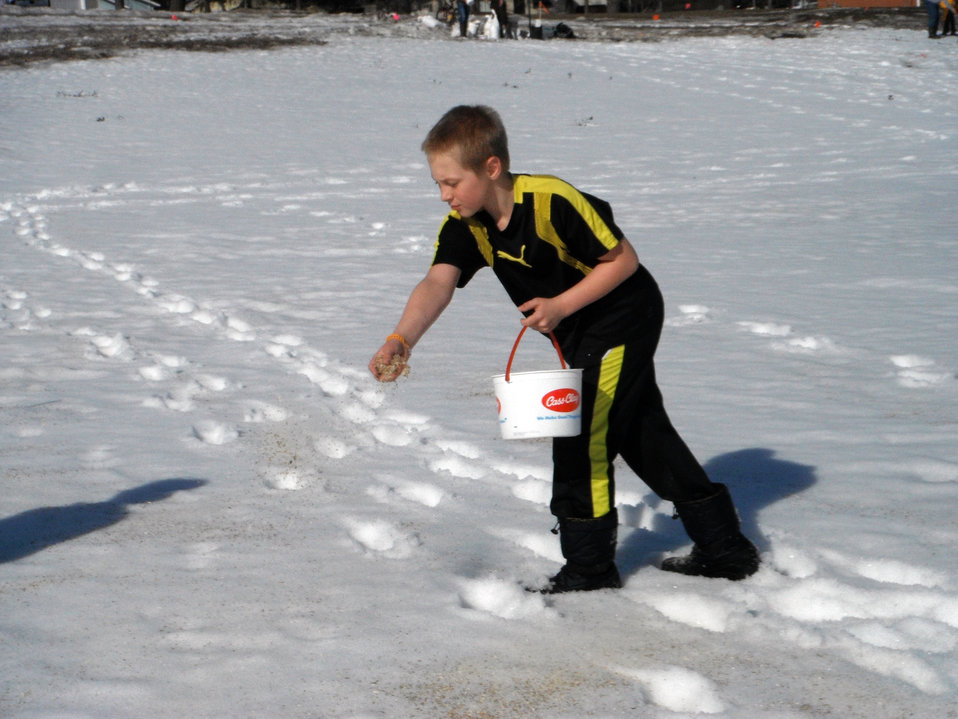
Sowing Seeds

A 5th grader in the Prairie Science Class in Fergus Falls, Minnesota helps seed the new prairie restoration at Kennedy Secondary School.